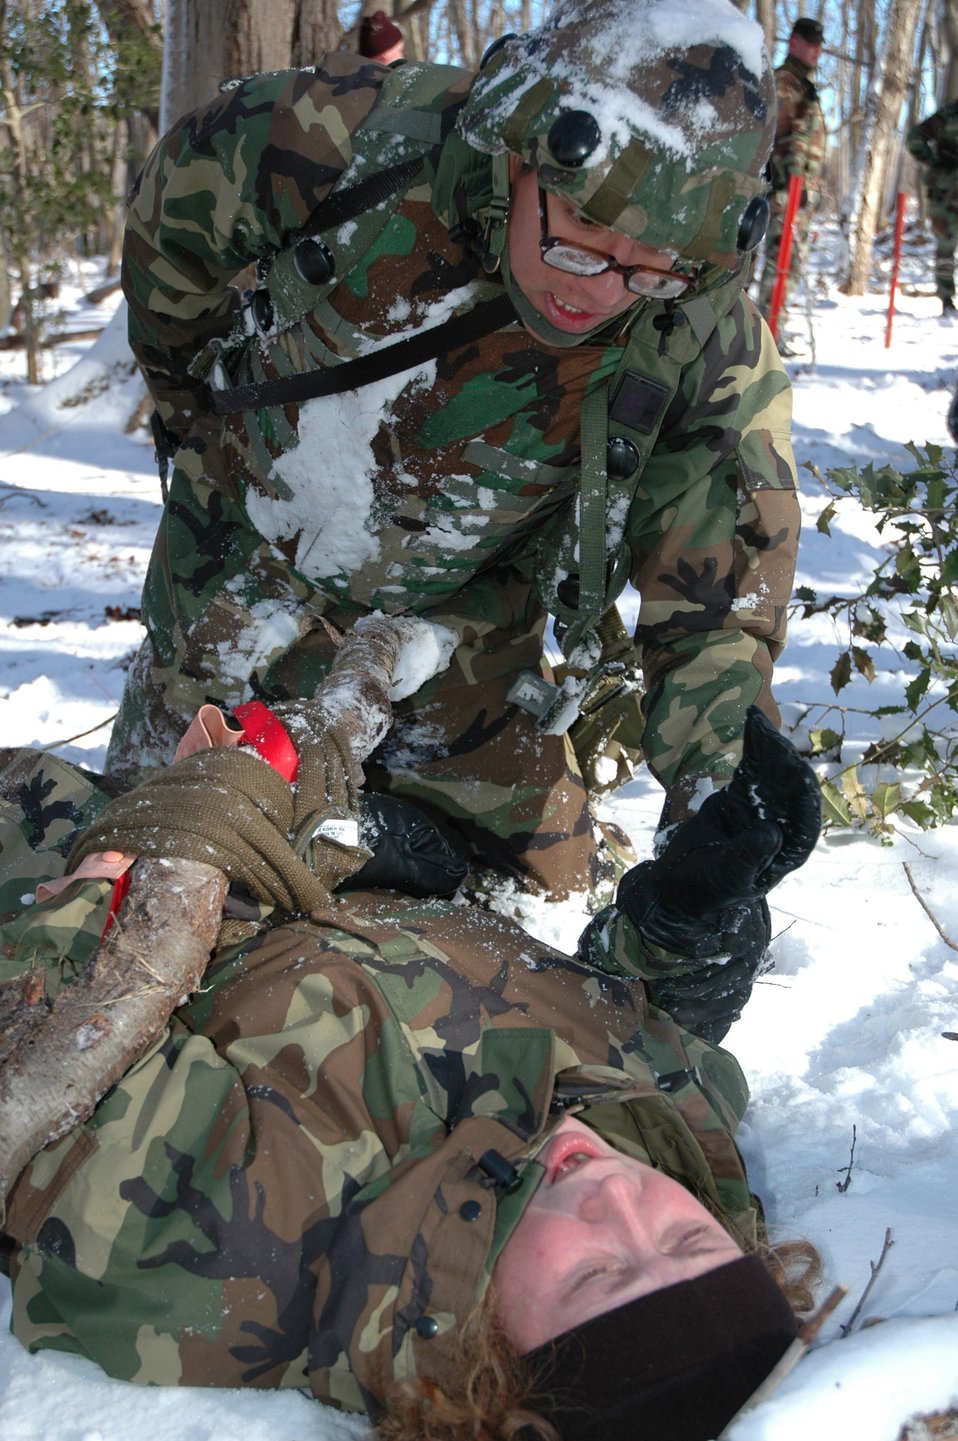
Winter training

FORT DIX, N.J. (AFPN) -- Airman 1st Class Sam Alvarado tends to Tech. Sgt. Christine Sanders who is portraying an injured Airman as part of the Air Mobility Warfare Center's Integrated Contingency Skills Training here Jan. 15. More than 100 Airmen from Air Mobility Command are participating in this program, which is designed to compliment wing-level training programs around the command. Airman Alvarado is with the 43d Security Forces Squadron at Pope Air Force Base, N.C., and Sergeant Sanders is an instructor with the 421st Combat Training Squadron.